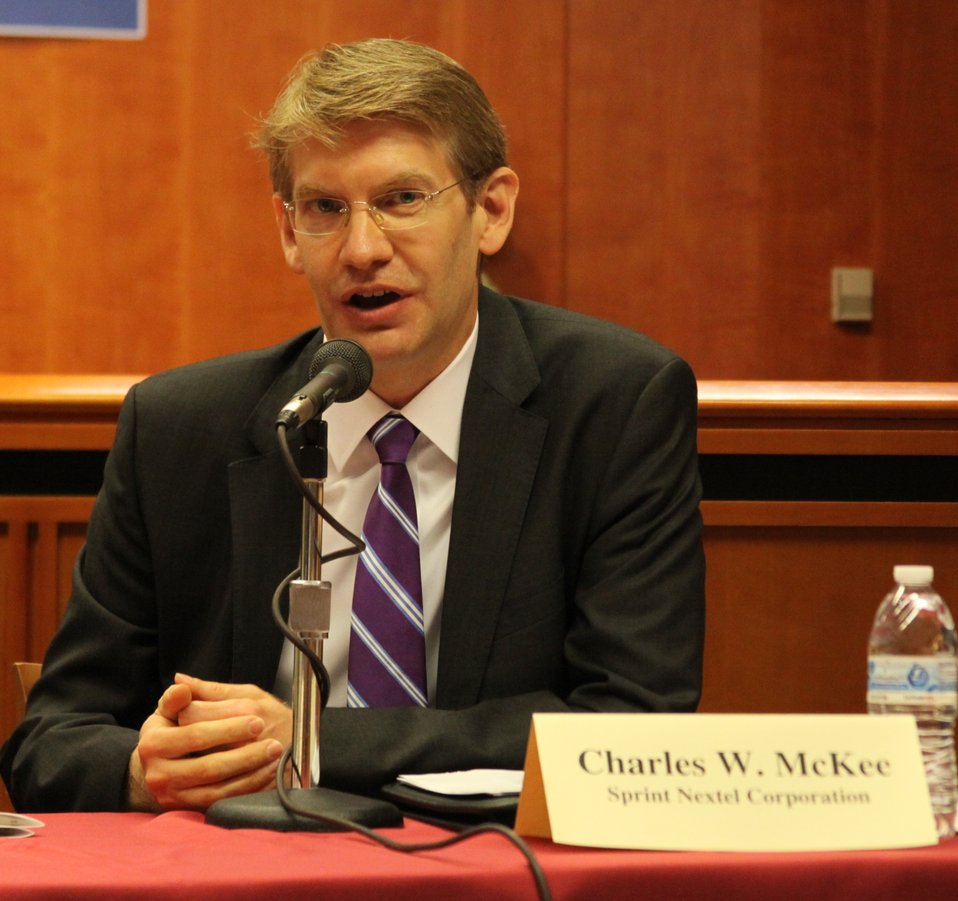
April 17, 2013 Bill Shock and Cramming Workshop